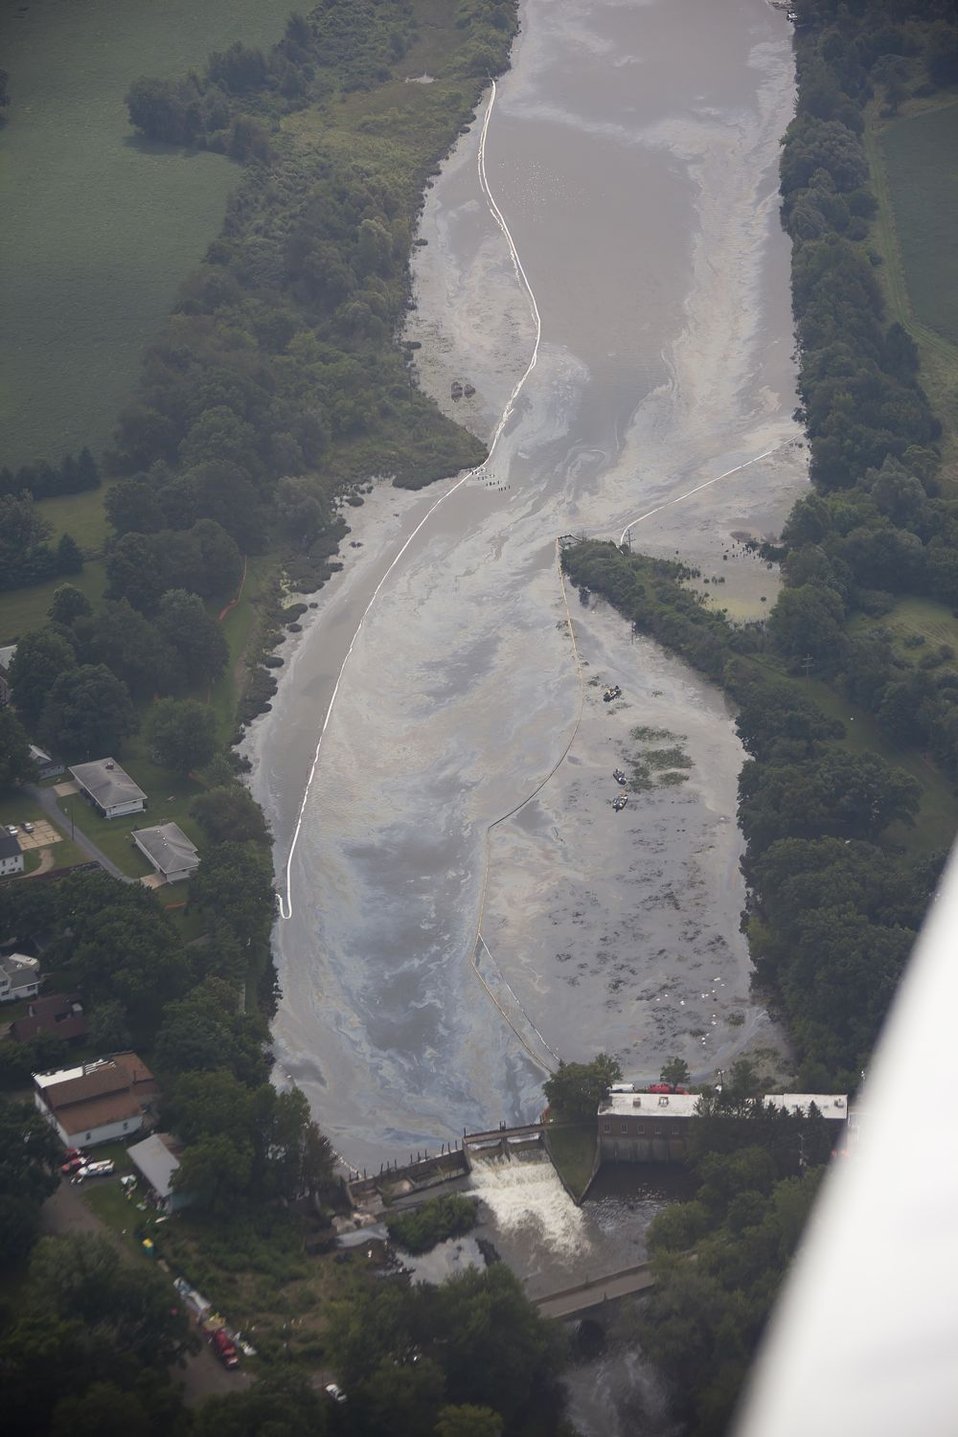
Oil Siphon

August 9, 2010 - Aerial view of oil sheen emitting from contaminated vegetation at the Ceresco Dam area between the spill site and Battle Creek, Michigan.